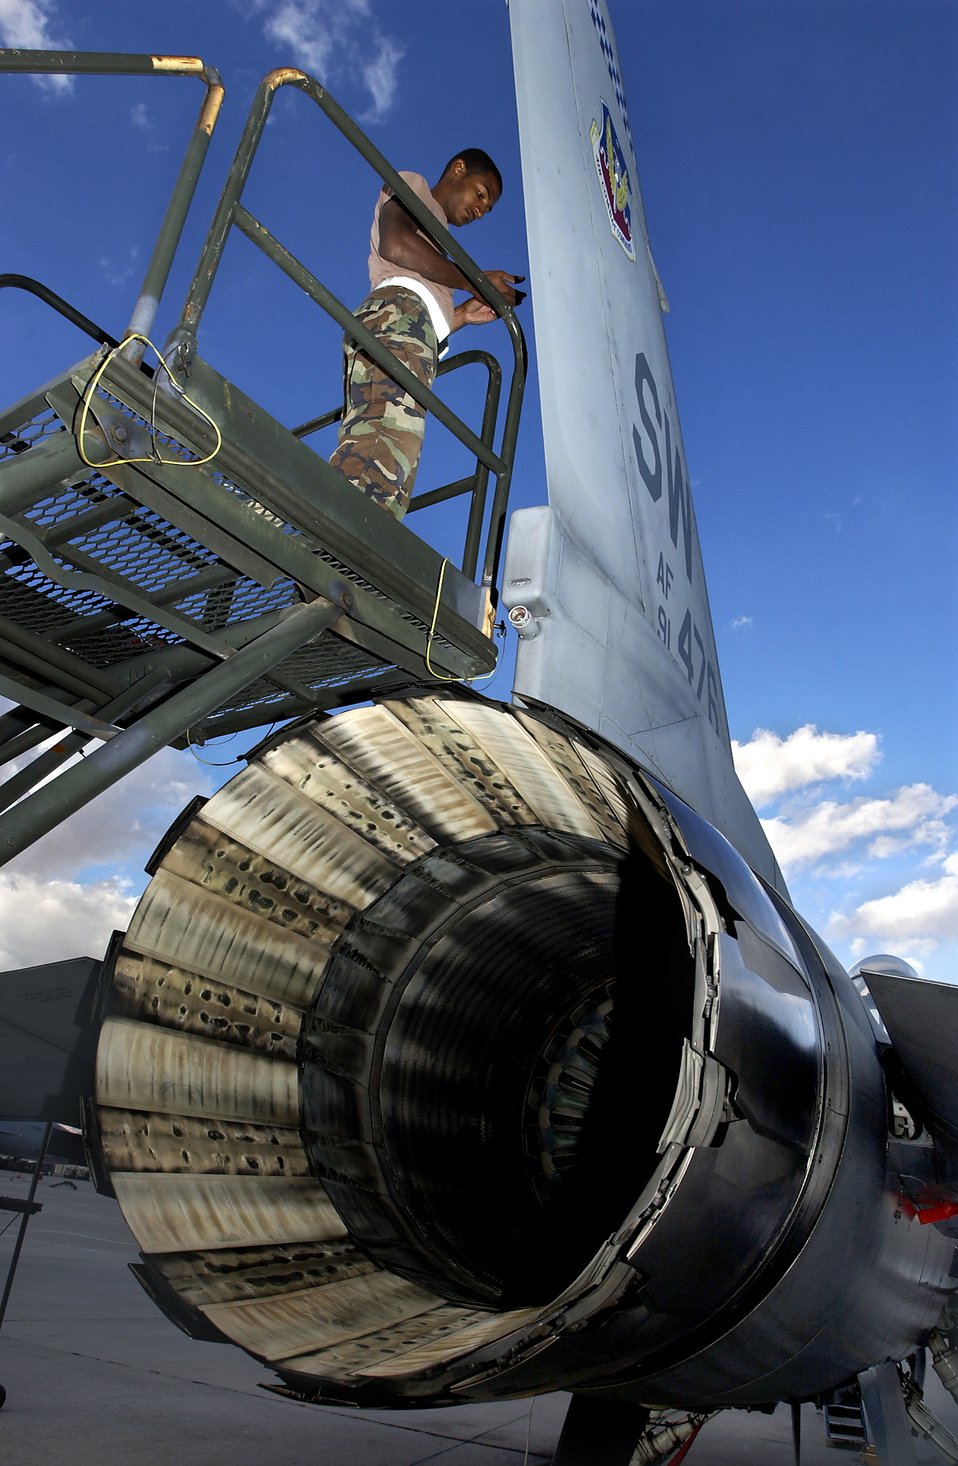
Antenna installation

Senior Airman Benjamin Nash installs an antenna on the tail of an F-16 Fighting Falcon during Exercise Red Flag 07-1 at Nellis Air Force Base, Nev., Oct. 18. Airman Nash is with the 55th Aircraft Maintenance Unit at Shaw AFB, S.C.